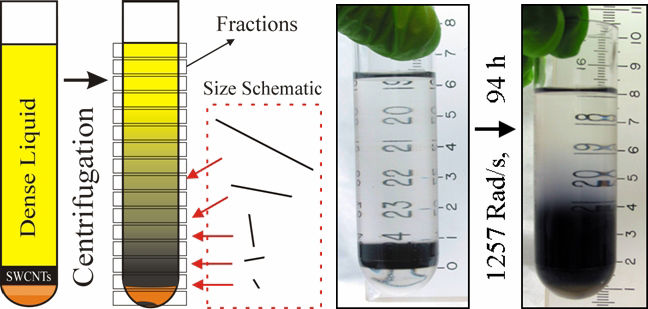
New Technique Sorts Nanotubes by Length

In a schematic of NIST's length separation technique for carbon nanotubes (l.), the nanotubes start at the bottom of a dense fluid. When spun in a centrifuge, the nanotubes begin to migrate through the fluid driven by their buoyancy, but the longer ones move faster, spreading them out by length. Photos (r.) shows a typical sample at the start and after 94 hours of spinning at 1257 radians per second (roughly 12,000 RPM.)